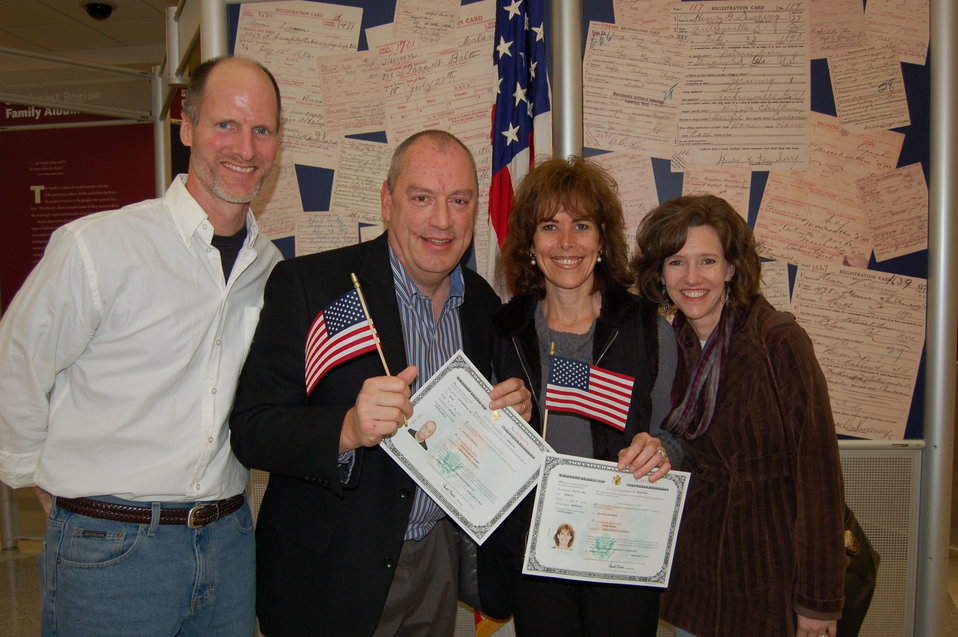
New Citizens